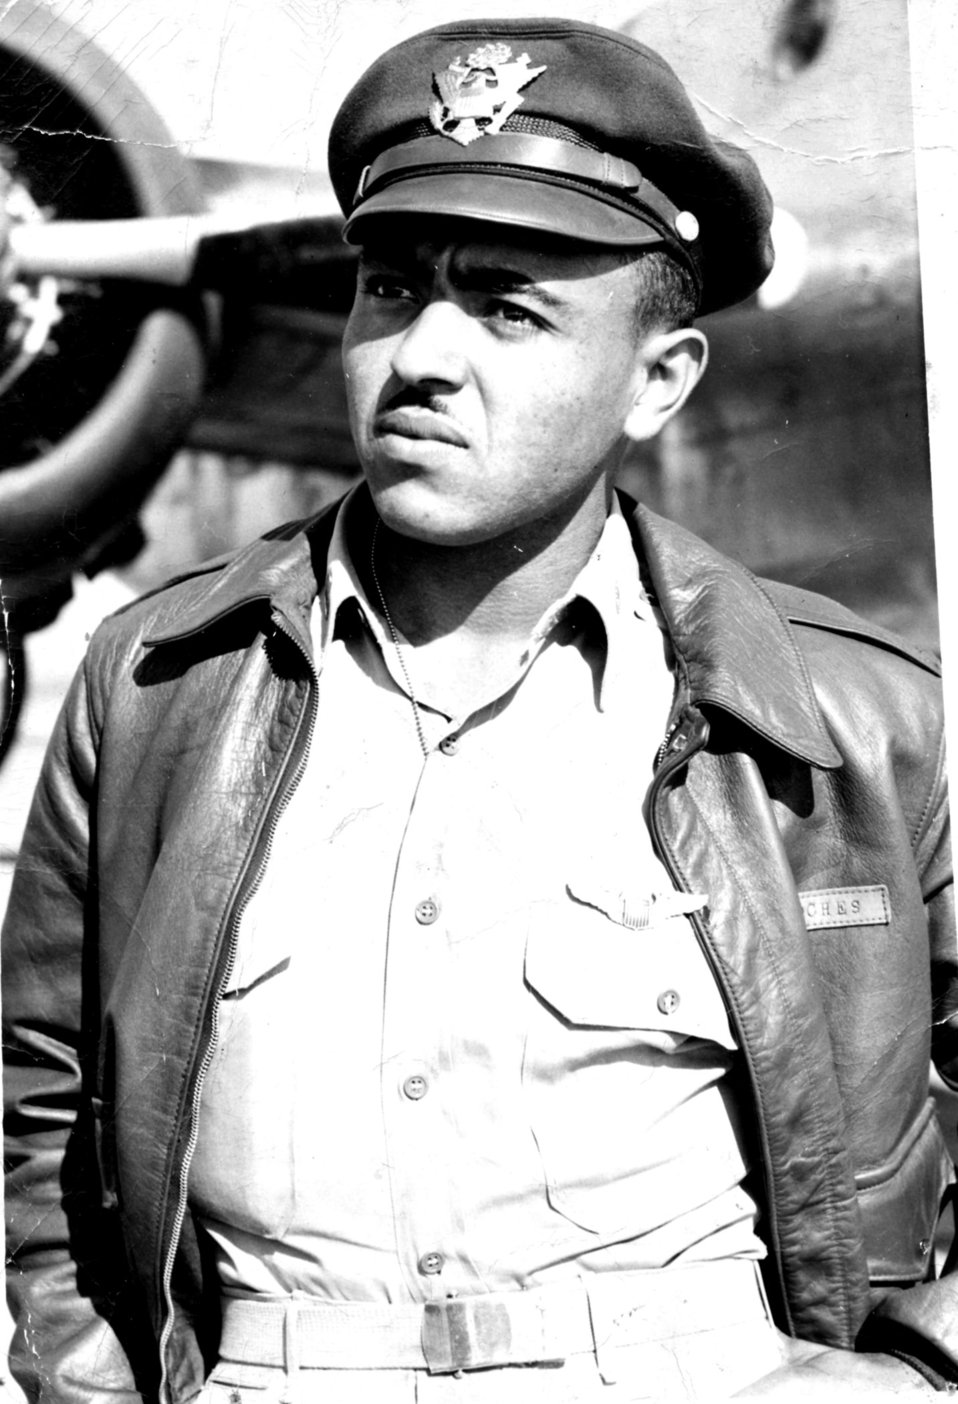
Airman continues grandfather?s Tuskegee legacy at Balad

An undated photo shows 1st Lt. Ramon F. Noches, a Tuskegee Airman assigned to the 477th Bomb Group Godman Field at Fort Knox, Ky. Lieutenant Noches was killed in a B-25G aircraft accident June 6, 1945, during night-flying training at Gunter Army Air Field, Montgomery, Ala. He was a grandfather to Tech. Sgt. Rose Noches, a surgical service craftsman with the 332nd Expeditionary Medical Group at Balad Air Base, Iraq.